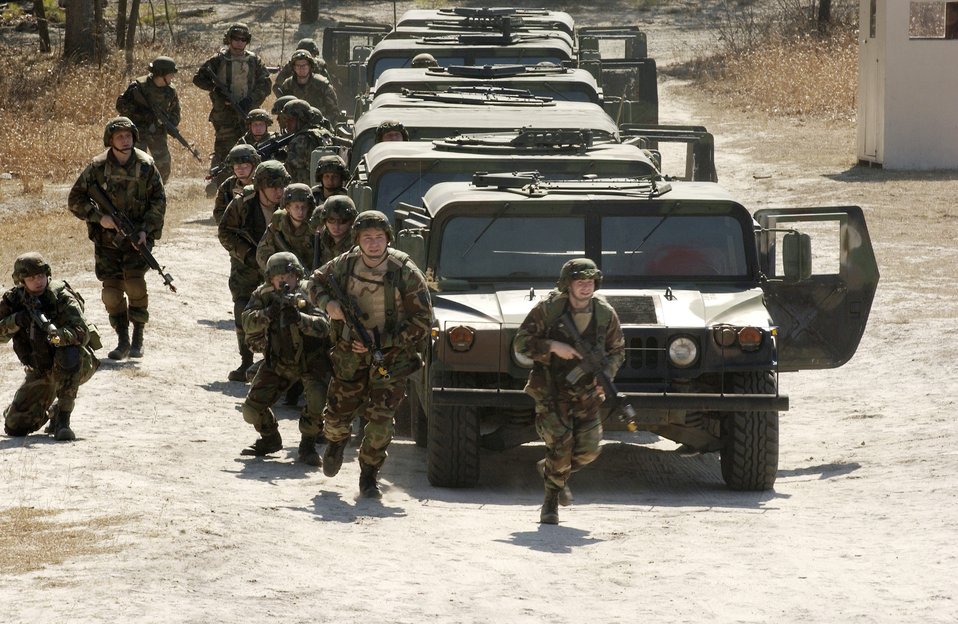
Urban tactics

Airmen evacuate their high-mobility multipurpose wheeled vehicles and prepare to take up defensive fighting positions in a simulated village, during the urban tactics block of Contingency Skills Training at Fort Dix, N.J., on Tuesday, March 28, 2006.